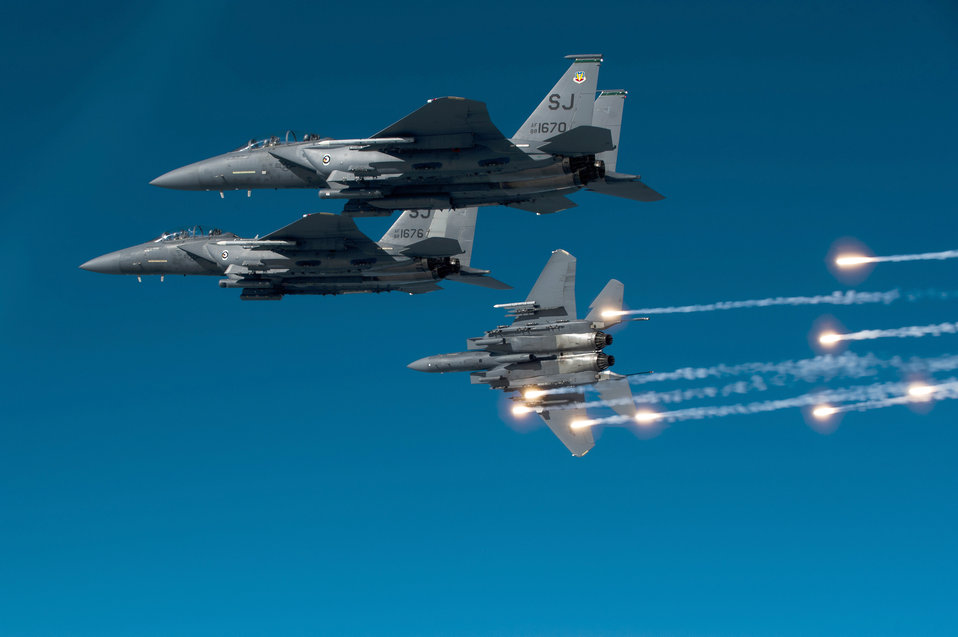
F-15s training mission

Flares are released from an F-15E Strike Eagle during a local training mission Dec. 17, 2010, over North Carolina. The F-15E is from the 335th Fighter Squadron from Seymour Johnson Air Force Base, N.C.